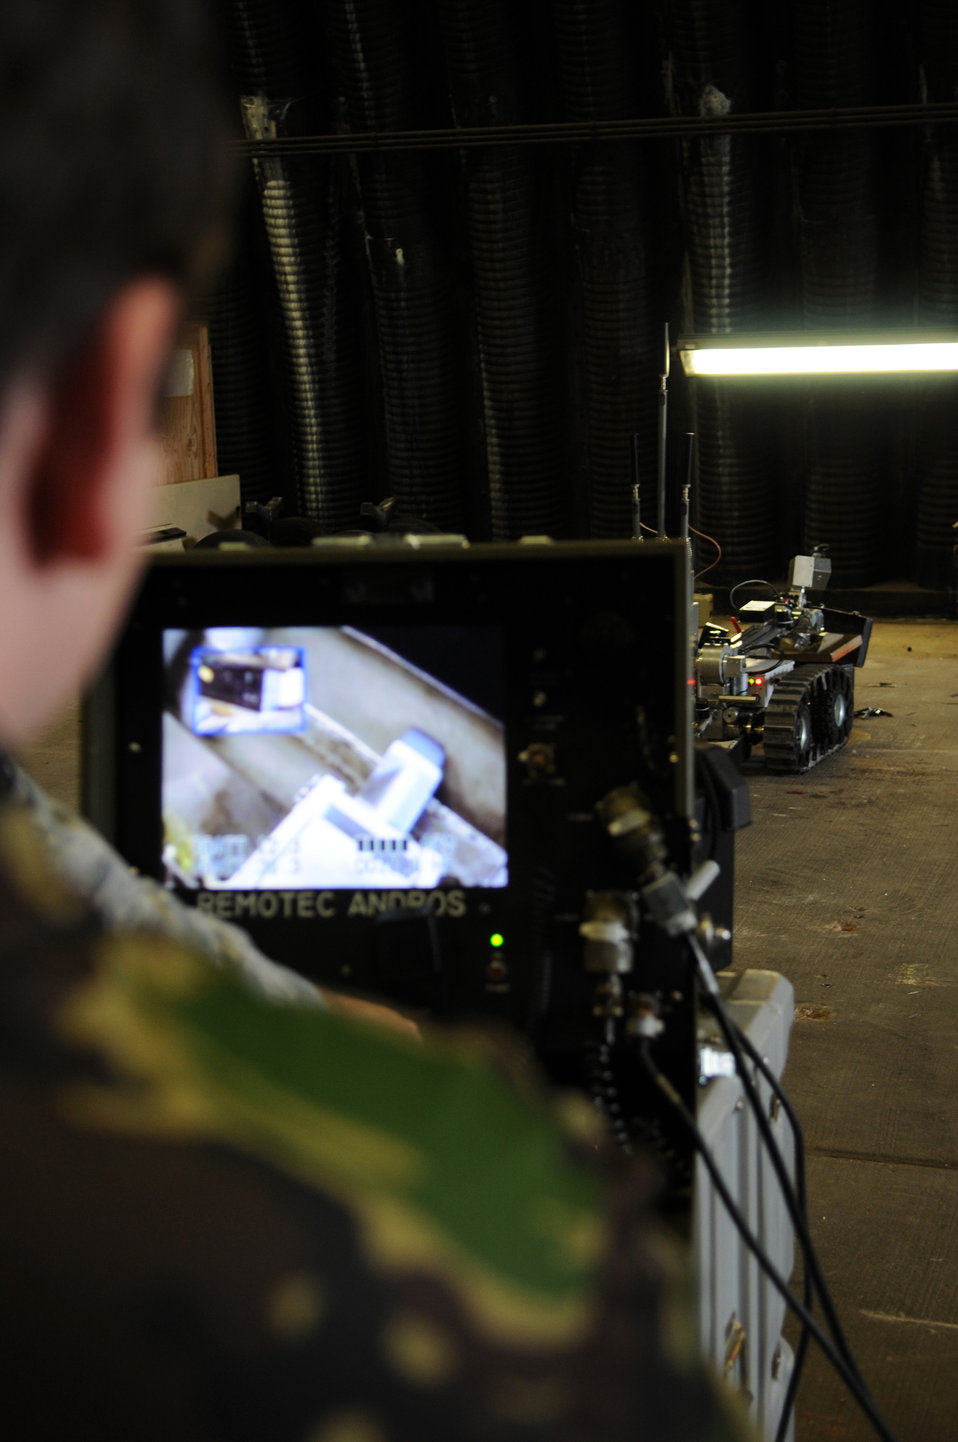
British cadets nurture 'spirit of adventure' at Ramstein

British Air Cadet Cpl. Ian Callow operates an explosive ordnance disposal talon robot during the cadet's July 14 visit to Ramstein Air Base, Germany. Cadets visited Ramstein AB for a week of leadership development and contingency skills training.